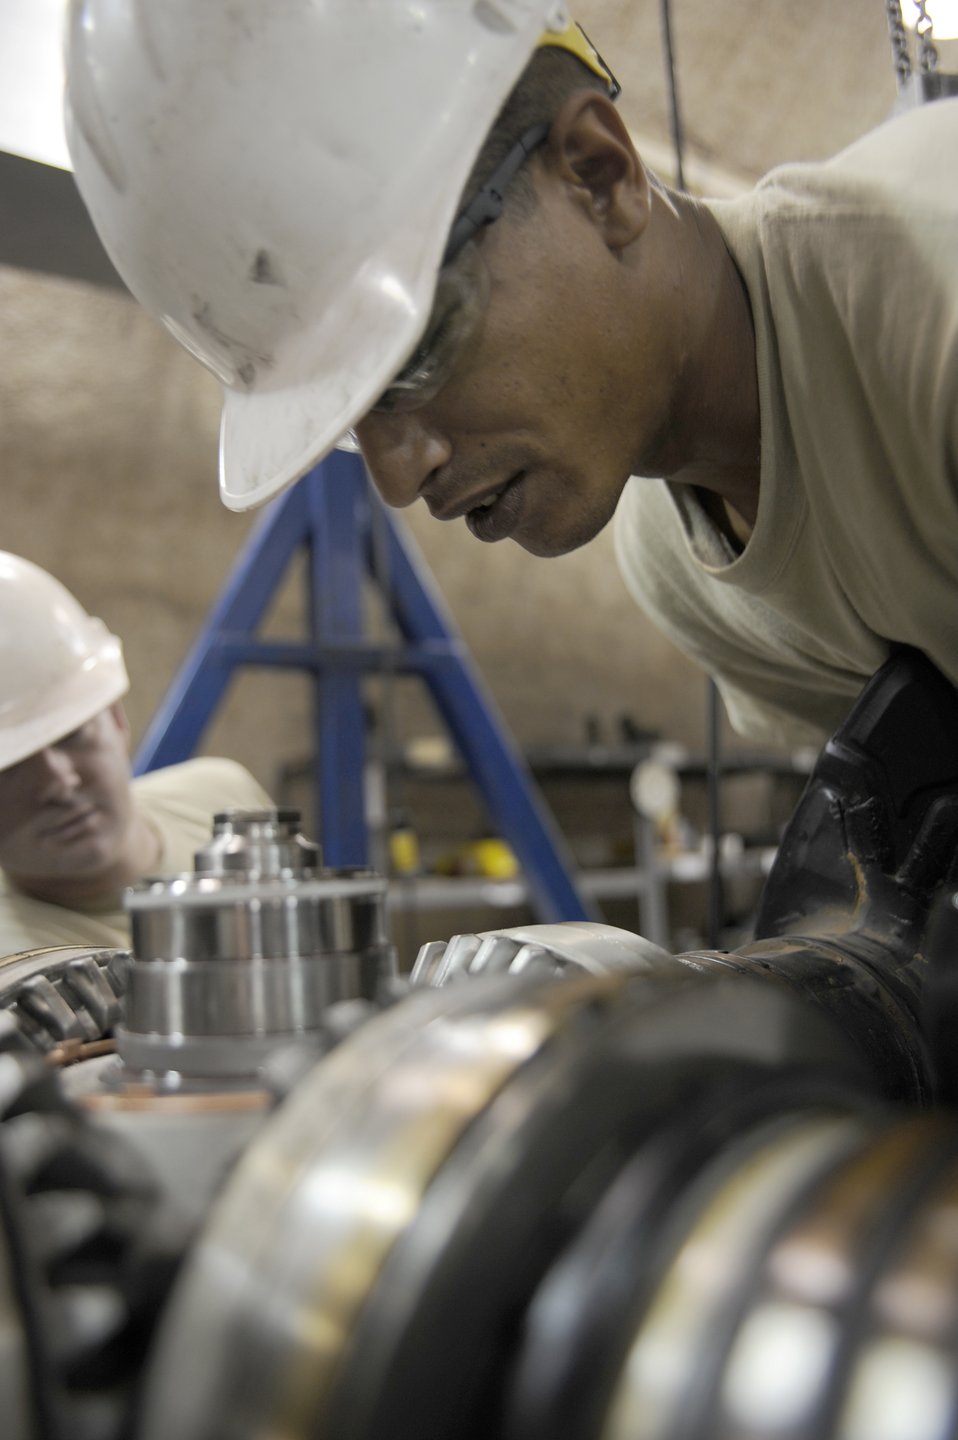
C-130 propeller blades

Senior Airman Aaron Arnold installs a C-130 propeller blade Aug. 30, 2010, at a base in Southwest Asia. Airman Arnold is a jet engine mechanic with the 379th Expeditionary Maintenance Squadron and is deployed from Little Rock Air Force Base, Ark.